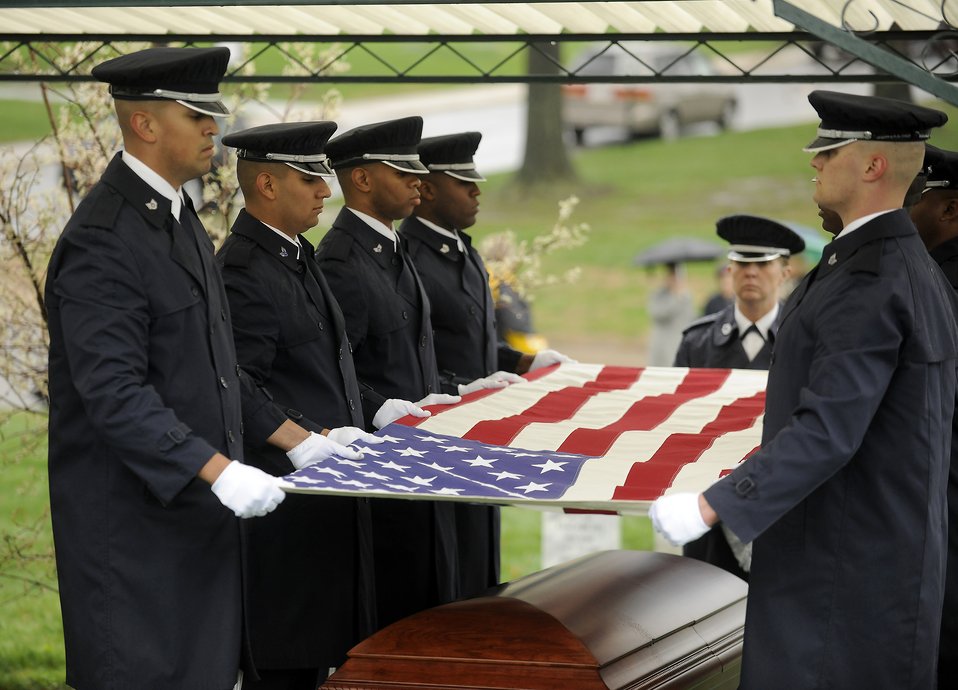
Maj. Gen. Jeanne M. Holm Funeral

U.S. Air Force Honor Guard flag detail members prepare the U.S. flag March 29, 2010, that covered the casket of Maj. Gen. Jeanne M. Holm during her burial ceremony in Arlington National Cemetery. She was promoted to major general with an effective date of July 1, 1970, and was the first woman in the Armed Forces to serve in that grade.